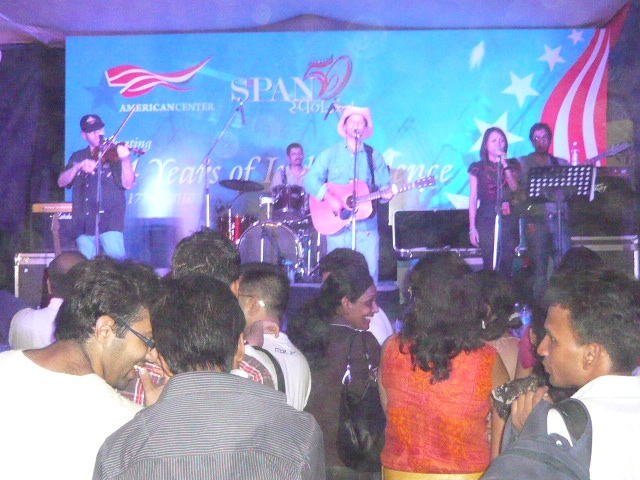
Nashville Freight Plays at the U.S. Embassy New Delhi's U.S. Independence Day Celebration

Nashville Freight, an alternative country band composed of both Americans and Indians, plays at the U.S. Embassy New Delhi in India's U.S. Independence Day celebration on July 3, 2010.